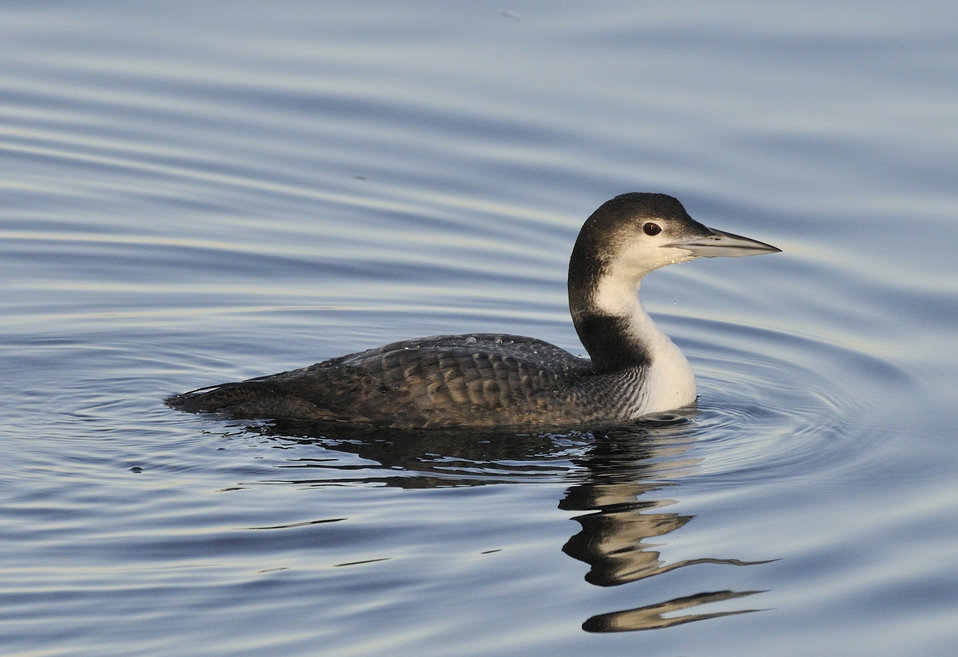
Common Loon

Photographed in Provincetown, MA.